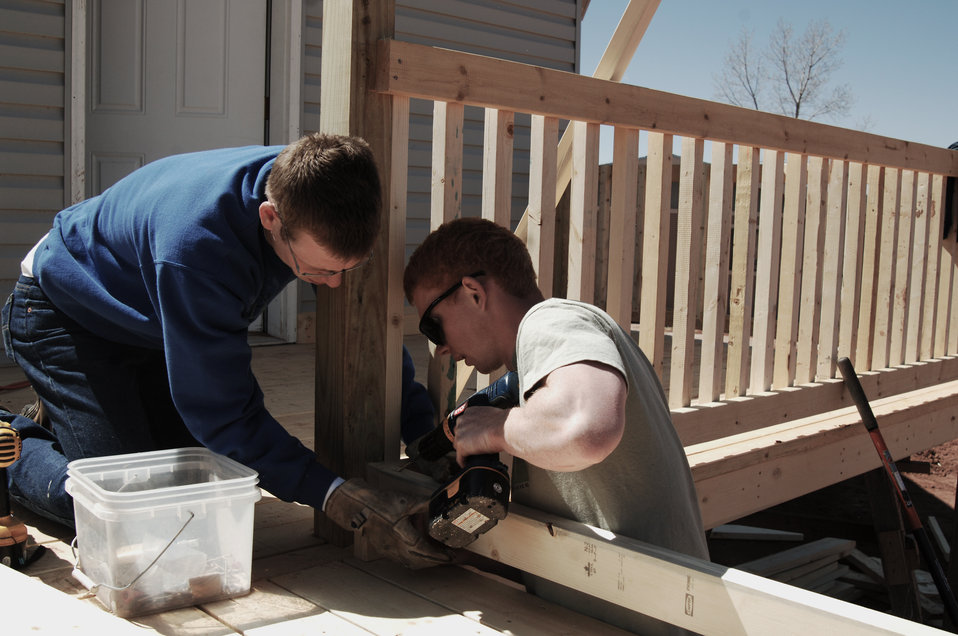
Academy engineers, faculty assist Navajo Nation

U.S. Air Force Academy Cadet 1st Class Adam Comer (left) steadies a board while Cadet 3rd Class Randy Semrau secures it to the deck of a traditional Navajo hogan in Window Rock, Ariz.